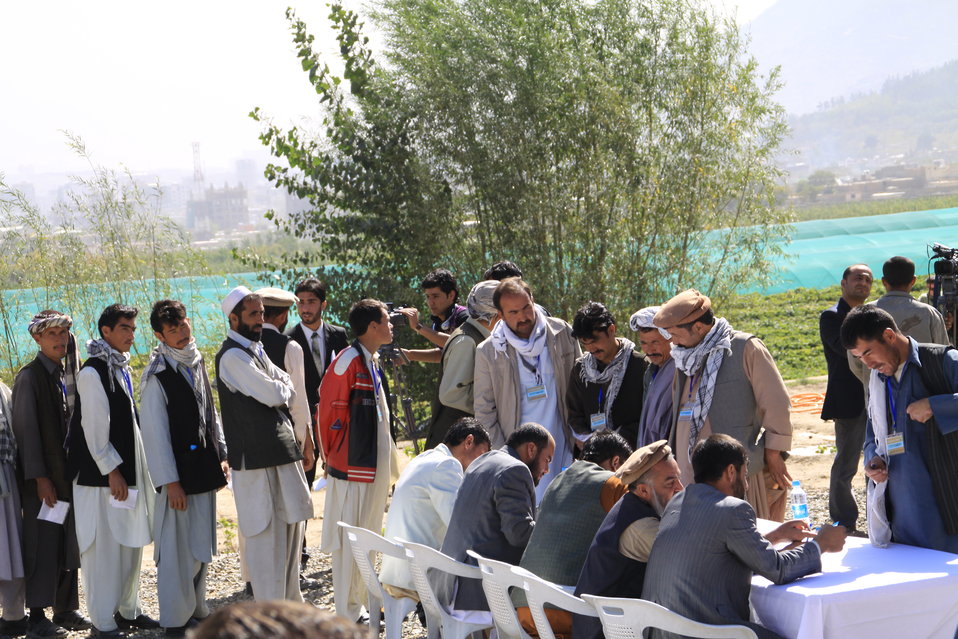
AVIPA Plus Wheat Seed Distribution 101005

US Ambassador Karl Eikenberry and USAID Acting Mission Director Kevin Brownawell joined the Minister of Agriculture, Irrigation and Livestock, H.E. Minister Mohammed Rahimi in signing a Memorandum of Understanding and distributing vouchers to area farmers for wheat and fertilizer.

US Ambassador Karl Eikenberry and USAID Acting Mission Director Kevin Brownawell joined the Minister of Agriculture, Irrigation and Livestock, H.E. Minister Mohammed Rahimi in signing a Memorandum of Understanding and distributing vouchers to area farmers for wheat and fertilizer.

US Ambassador Karl Eikenberry and USAID Acting Mission Director Kevin Brownawell joined the Minister of Agriculture, Irrigation and Livestock, H.E. Minister Mohammed Rahimi in signing a Memorandum of Understanding and distributing vouchers to area farmers for wheat and fertilizer.